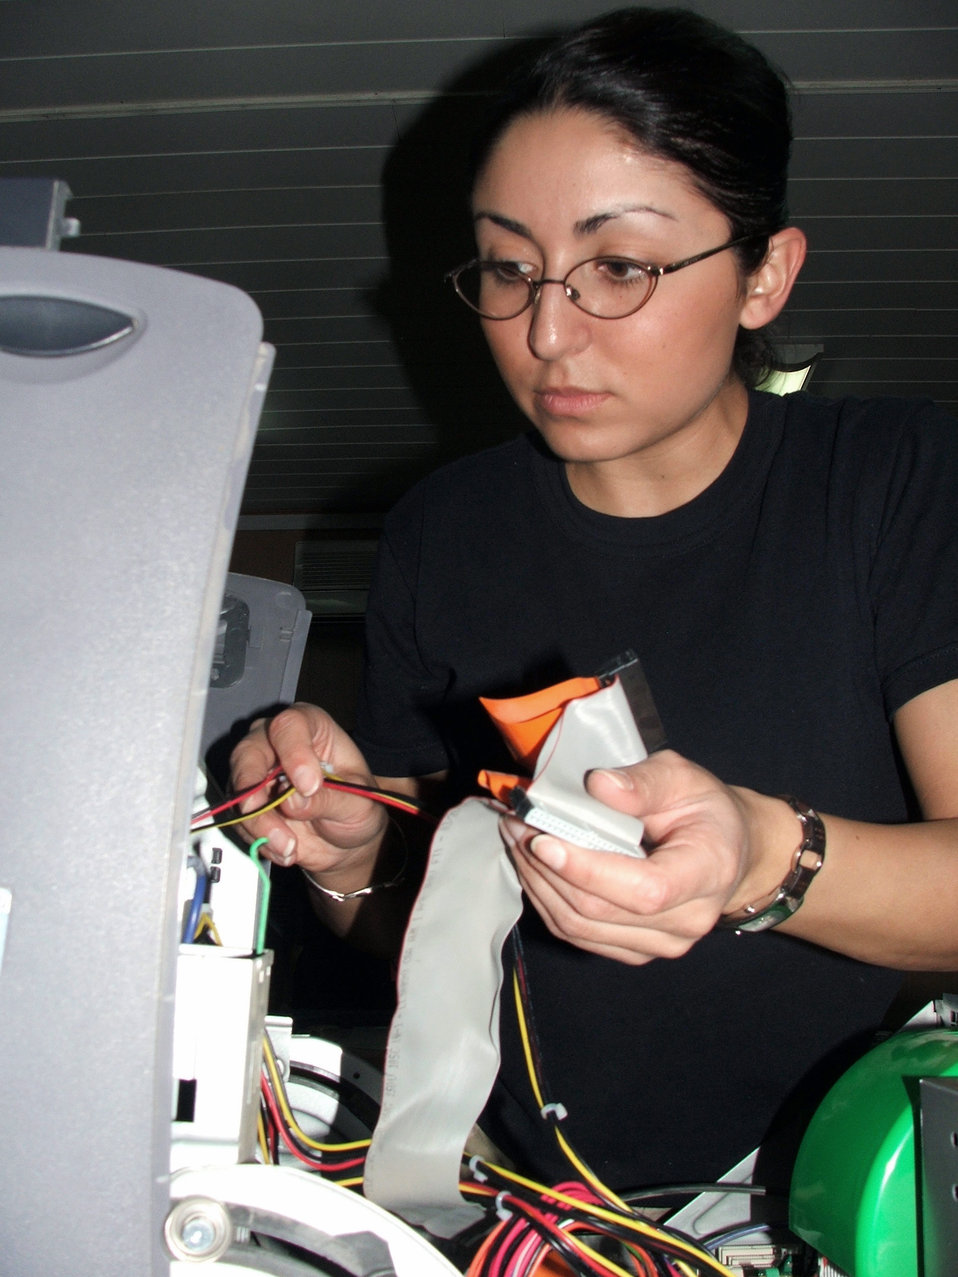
Combat communicators provide more than 'terabyte' of support

KARSHI-KHANABAD AIR BASE, Uzbekistan -- Senior Airman Rosie Alvarado repairs a computer here March 15. She is a communications-computer systems operations journeyman assigned to the 416th Expeditionary Mission Support Squadron communications flight and is deployed from Vandenberg Air Force Base, Calif.